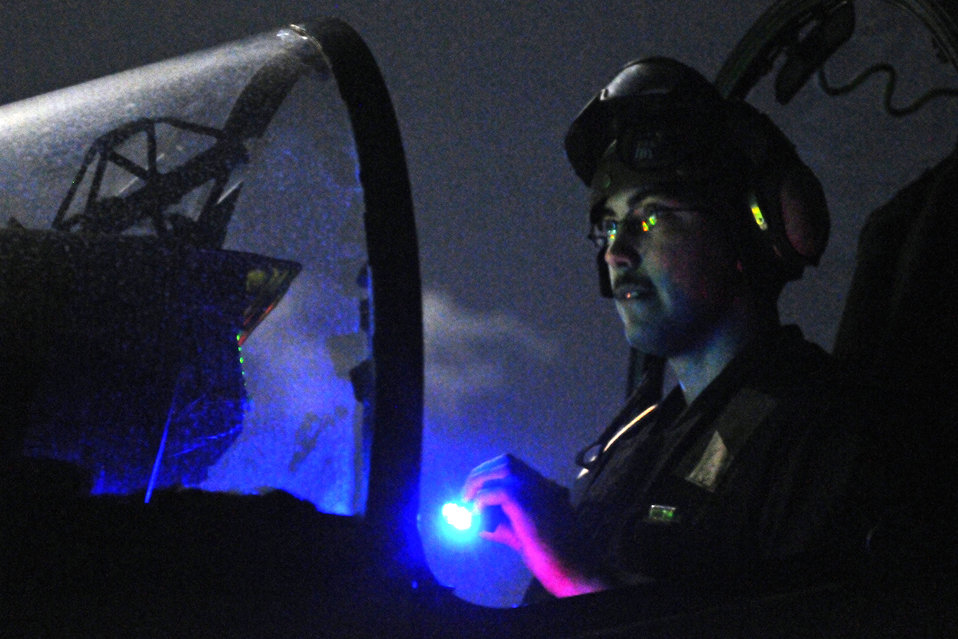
Odyssey Dawn

110319-N-3154P-631 MEDITERRANEAN SEA (March 19, 2011) Cpl. Sean Moberly, assigned to Marine Medium Tiltrotor Squadron (VMM) 266, 26th Marine Expeditionary Unit (26th MEU), runs preflight checks on an AV-8B Harrier on the flight deck of amphibious assault ship USS Kearsarge (LHD 3) in preparation for Operation Odyssey Dawn missions. Joint Task Force Odyssey Dawn is the U.S. Africa Command task force established to provide operational and tactical command and control of U.S. military forces supporting the international response to the unrest in Libya and enforcement of United Nations Security Council Resolution (UNSCR) 1973.